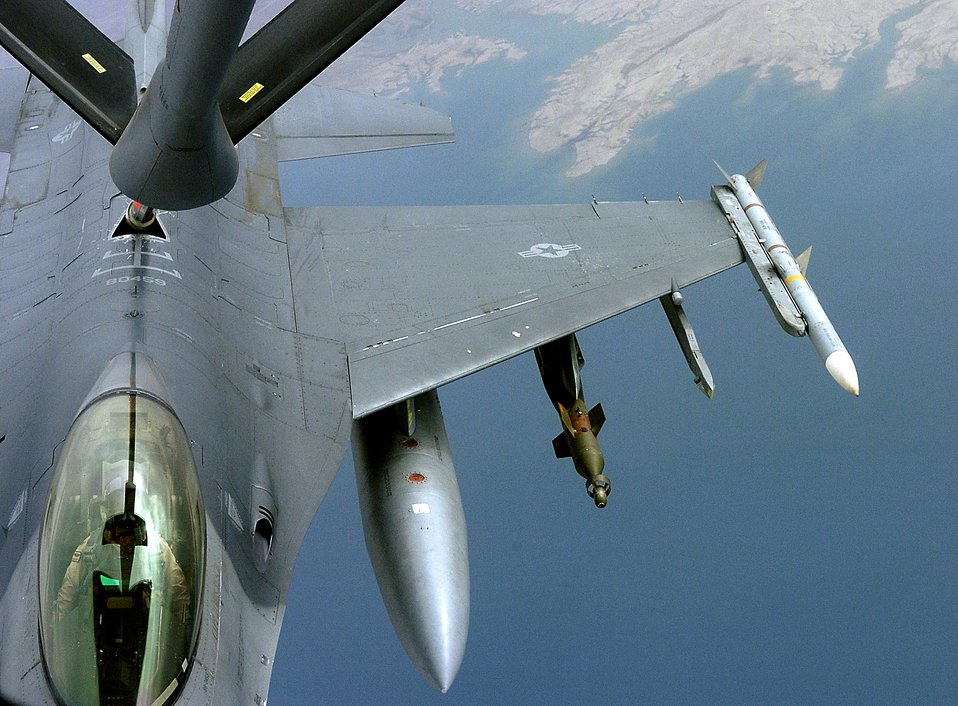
Refueling mission

An F-16 Fighting Falcon connects with the refueling boom of a KC-135 Stratotanker during a refueling mission over Iraq on Friday, May 5, 2006. The tanker is with the 340th Expeditionary Air Refueling Squadron at a base in Southwest Asia. The Falcon, from Hill Air Force Base, Utah, flies out of Balad Air Base, Iraq.